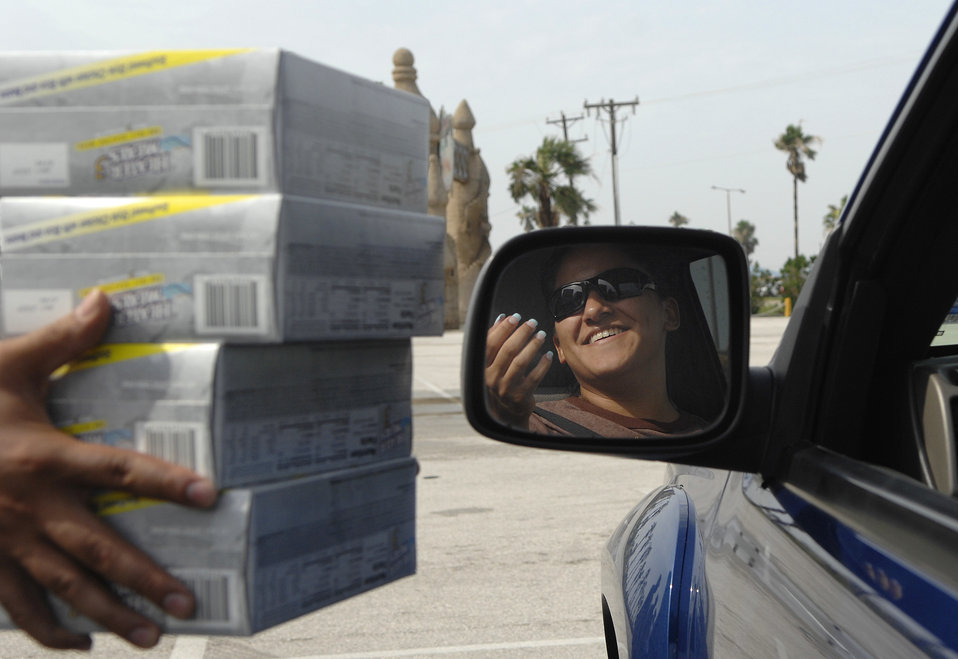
Hurricane Dolly

Relief task force members hand out self-heating food packages, bags of ice and cases of water July 24 to residents of South Padre Island, Texas, after the island was impacted by Hurricane Dolly. Task force members from the Army National Guard and civilian emergency response organizations were on hand to provide aid immediately following the hurricane.